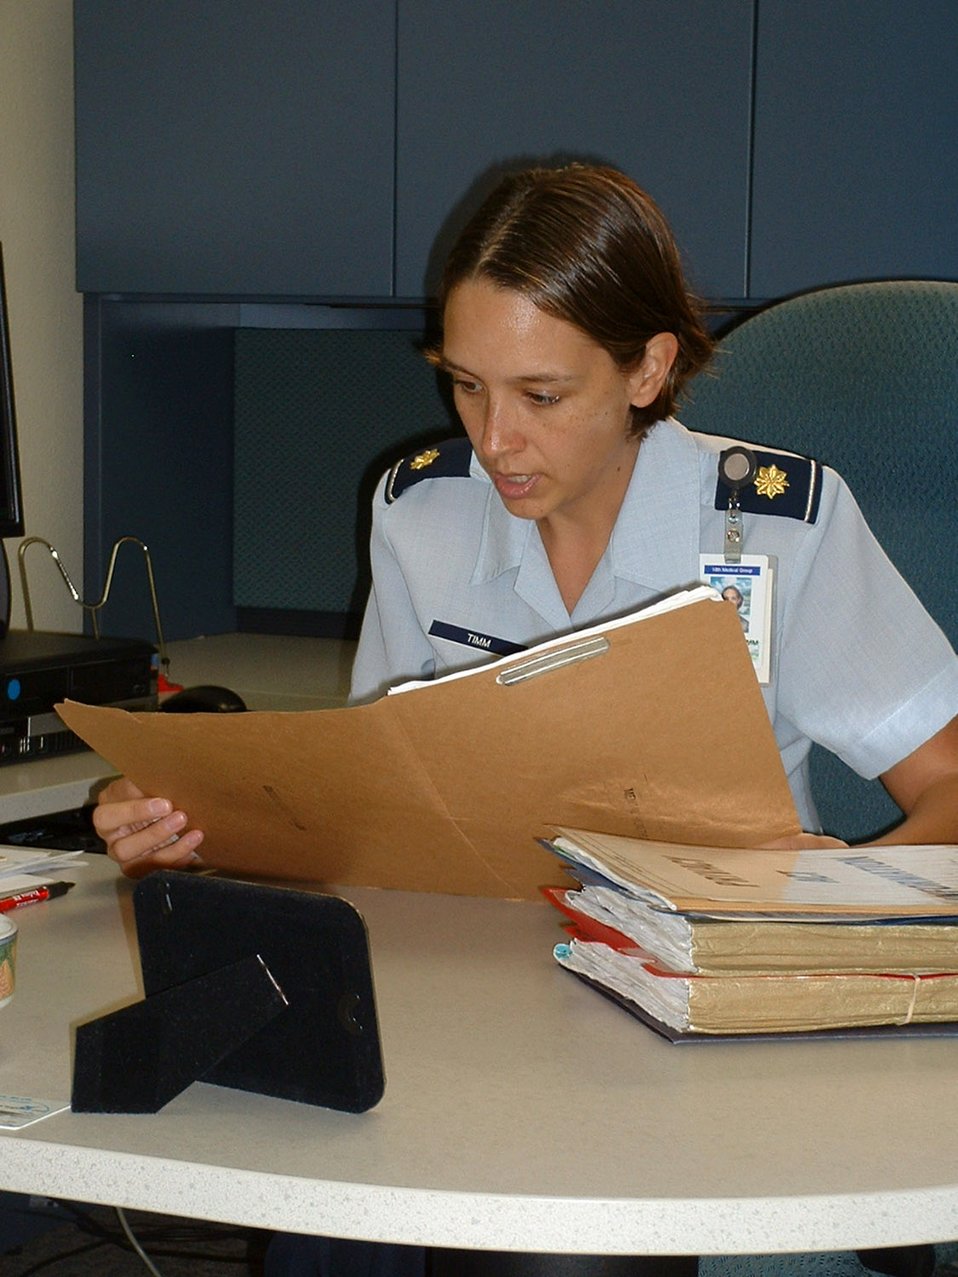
Suicide prevention education heightened during holidays

Maj. Samantha Timm looks over a patient record after counseling an Airman Dec. 20 at Kadena Air Base, Japan. As the New Year approaches, she sees a rise in Airmen coming to life skills during the holiday season